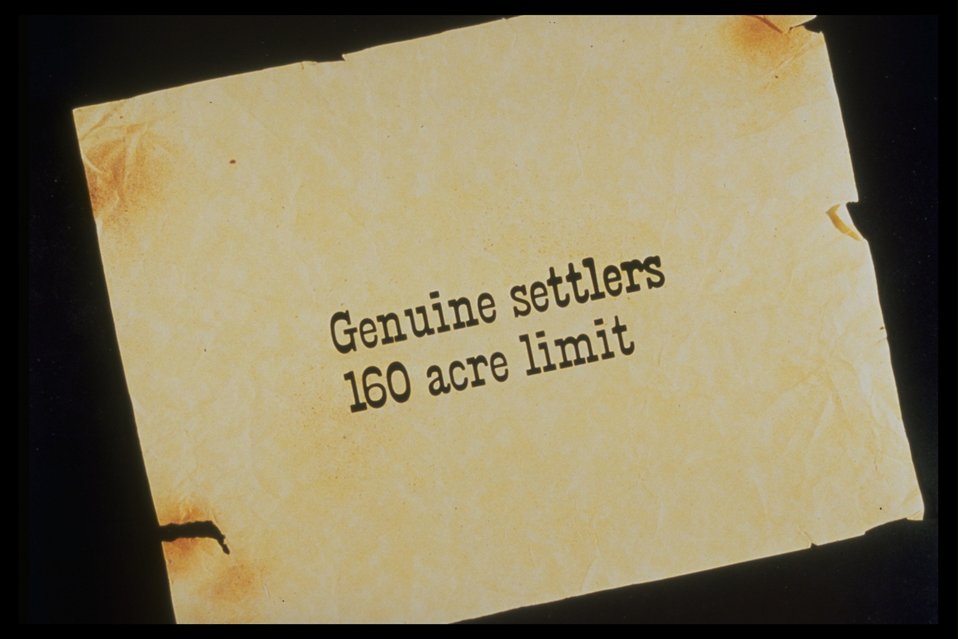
O & C title: genuine settlers 160 acre limit.